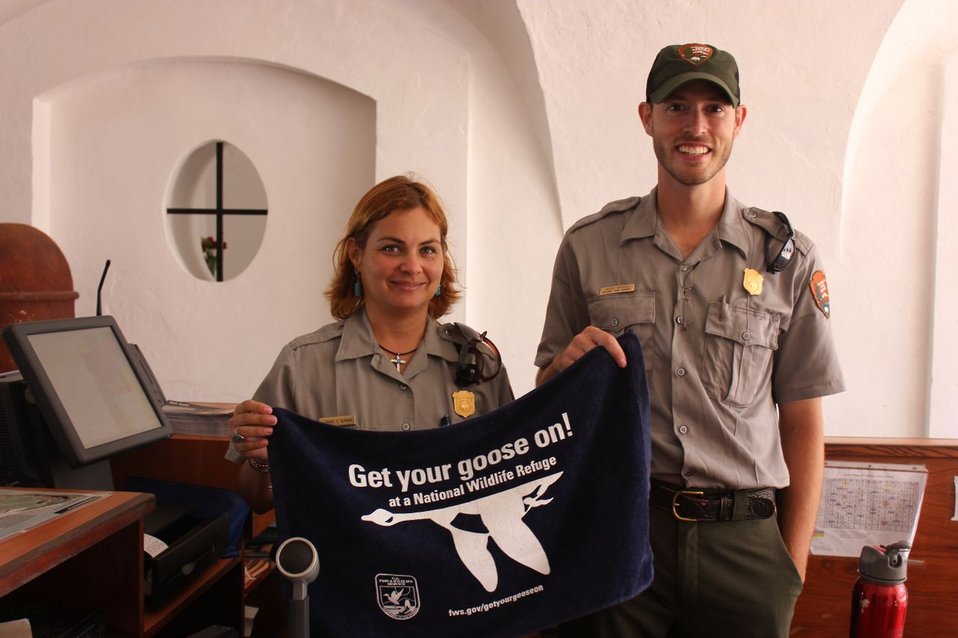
Park Service Employees Get Their Goose On, Too!

National Park Service Employees, Jason Briggs and Lorraine Serrano, get their goose on at Puerto Rico's Castillo de San Felipe del Morro.